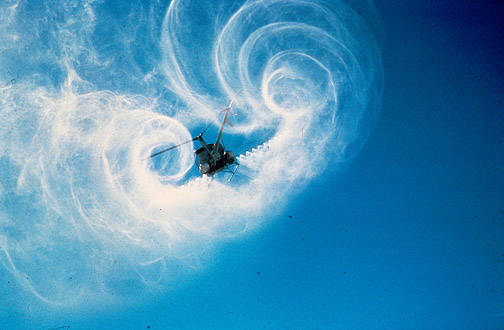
Helicopter Spraying